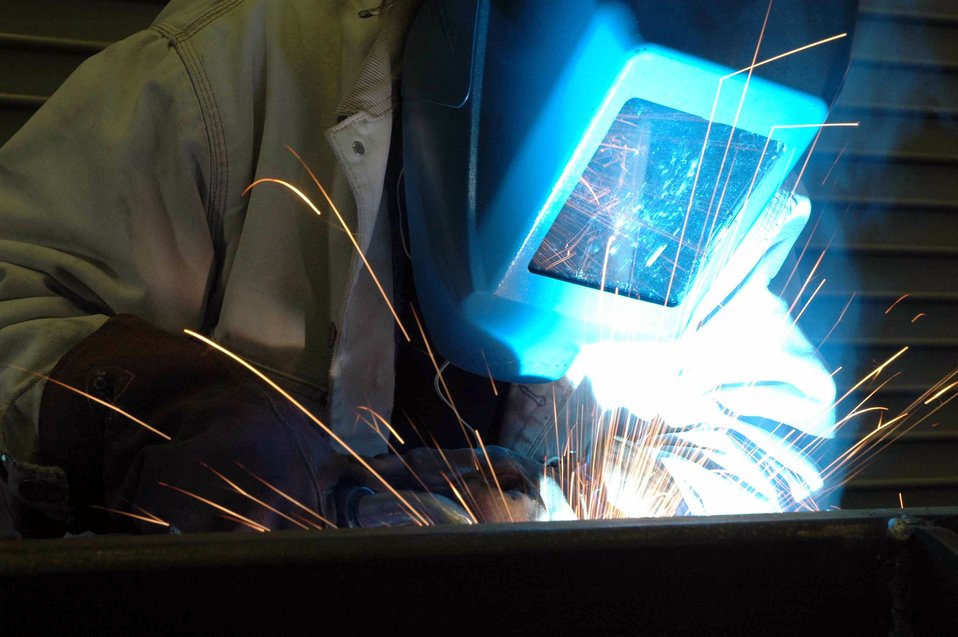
Small office comes up big

EGLIN AIR FORCE BASE, Fla. (AFPN) -- Danny Franklin welds metal together for an MK-84 container loading adapter designed by the munitions materiel handling equipment focal point. They support the Air Force armament and munitions community with the development of munitions support equipment, designing and fabricating tools to make life on the flightline easier for munitions Airmen. Mr. Franklin is with the 46th Test Wing Fabrication and Installation team.